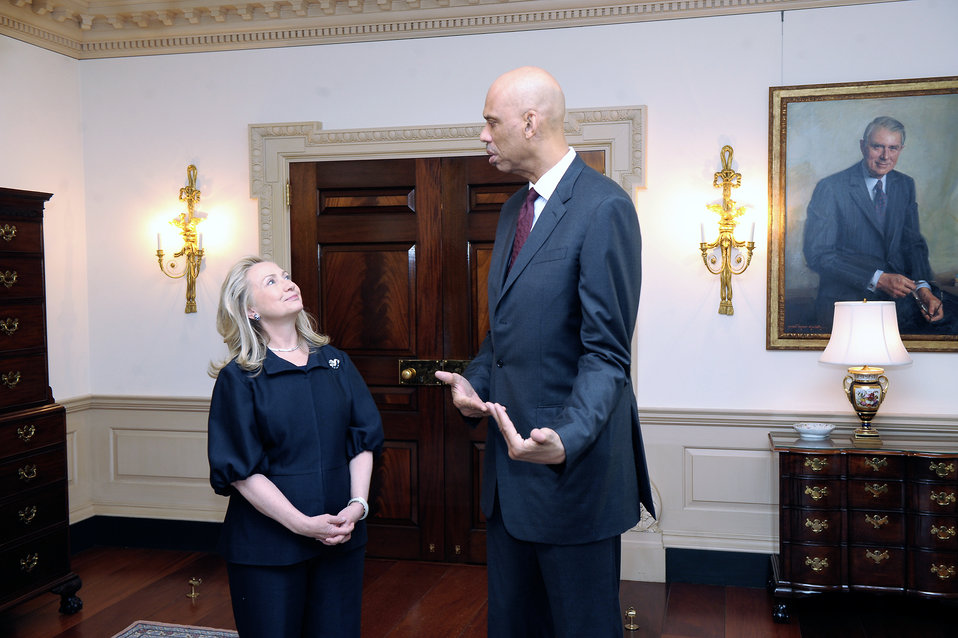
Secretary Clinton Meets With Kareem Abdul-Jabbar

U.S. Secretary of State Hillary Rodham Clinton meets with Hall-of-Famer Kareem Abdul-Jabbar, the NBA’s All-Time Leading Scorer and a New York Times’ best-selling author, to discuss his new role as a global Cultural Ambassador, at the U.S. Department of State in Washington, D.C., on January 18, 2012.